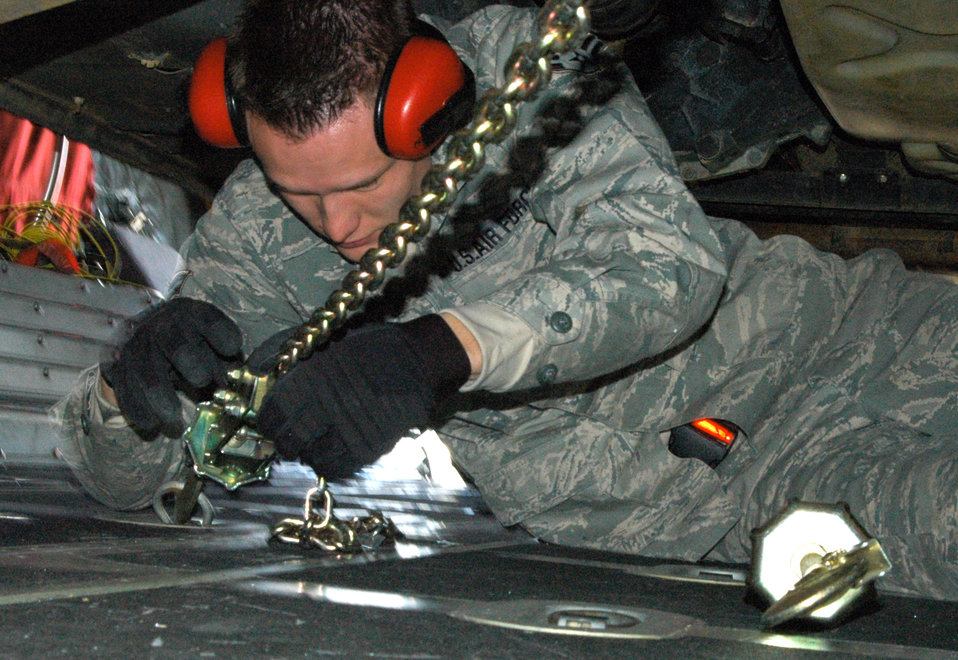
Airmen deliver Soldiers, communication equipment to Haiti

Airman 1st Class Nathan Weiland tightens down the final chain to secure an Army Humvee to a C-130 Hercules Jan. 27, 2010, at Pope Air Force Base, N.C. The Humvee and more than 10 Soldiers assigned to the 82nd Airborne Division were transported by the Minnesota Air National Guard's 133rd Airlift Wing to Haiti where they were expected to fulfill several missions in support of Operation Unified Response, including airport security in the capitol city of Port-au-Prince. Airman Weiland is a cargo rigger with the 3rd Aerial Port Squadron.